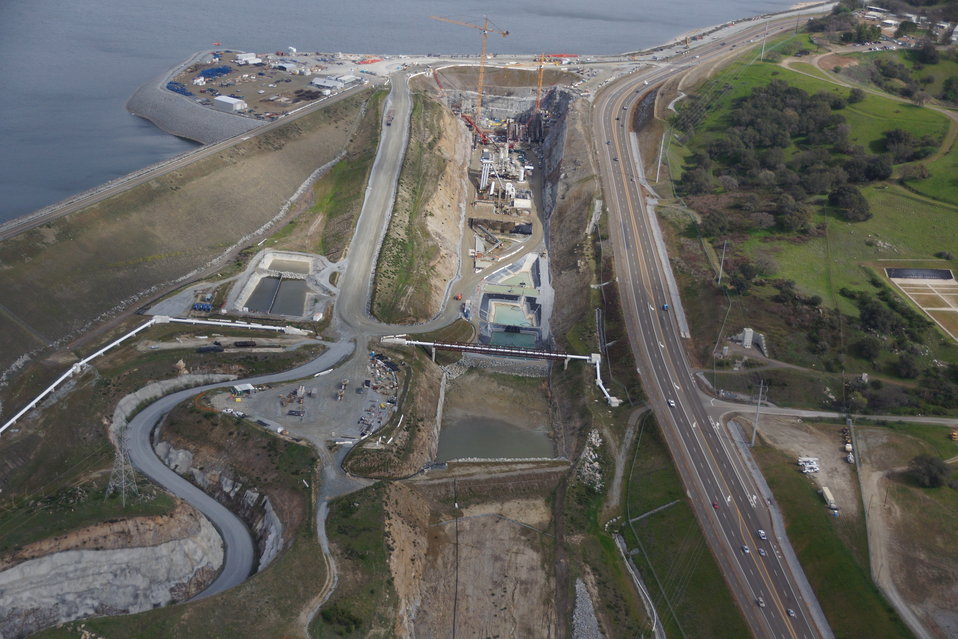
Aerial View of Folsom Dam Auxiliary Spillway

An aerial view shows the entire construction site of the Folsom Dam auxiliary spillway March 6, 2013. Excavation began in 2011 to remove 3.5 million cubic yards of rock and soil from the site. In 2012, the first steel and concrete were placed for the control structure—essentially a second dam—that will stand as tall as the Statue of Liberty when completed. The completed dam and chute will include 350,000 cubic yards of concrete, enough to line up concrete trucks from Sacramento to Los Angeles, and 24 million tons of steel, enough to build two Eiffel Towers. The project is estimated to be completed by October 2017 and is one piece of a larger plan to help the Sacramento region reduce the risk of flooding to a one-in-200 chance for flooding in any given year.